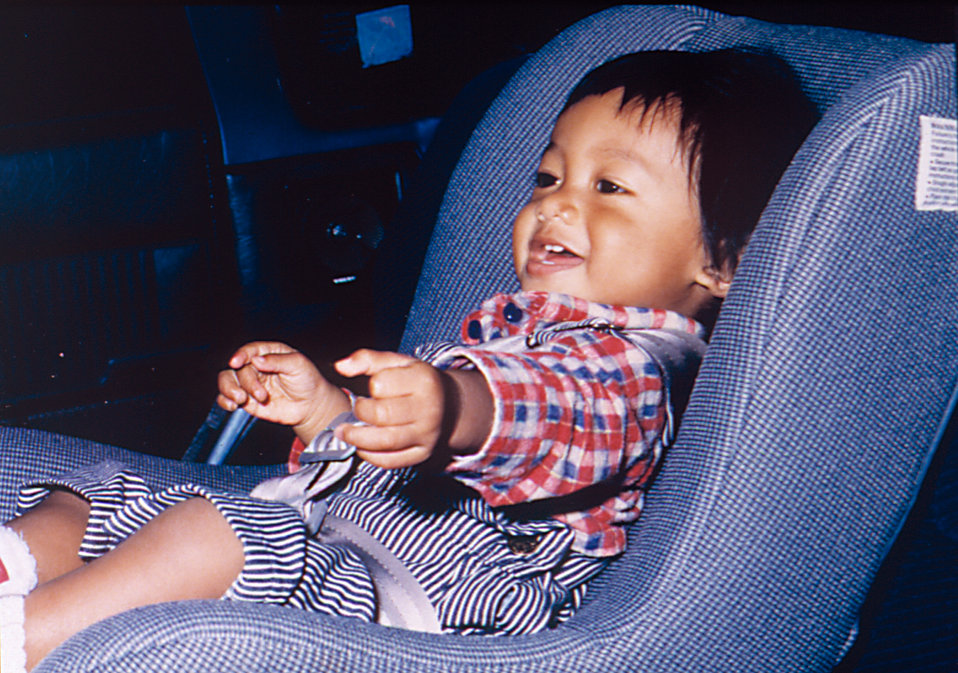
Baby in Car Seat.